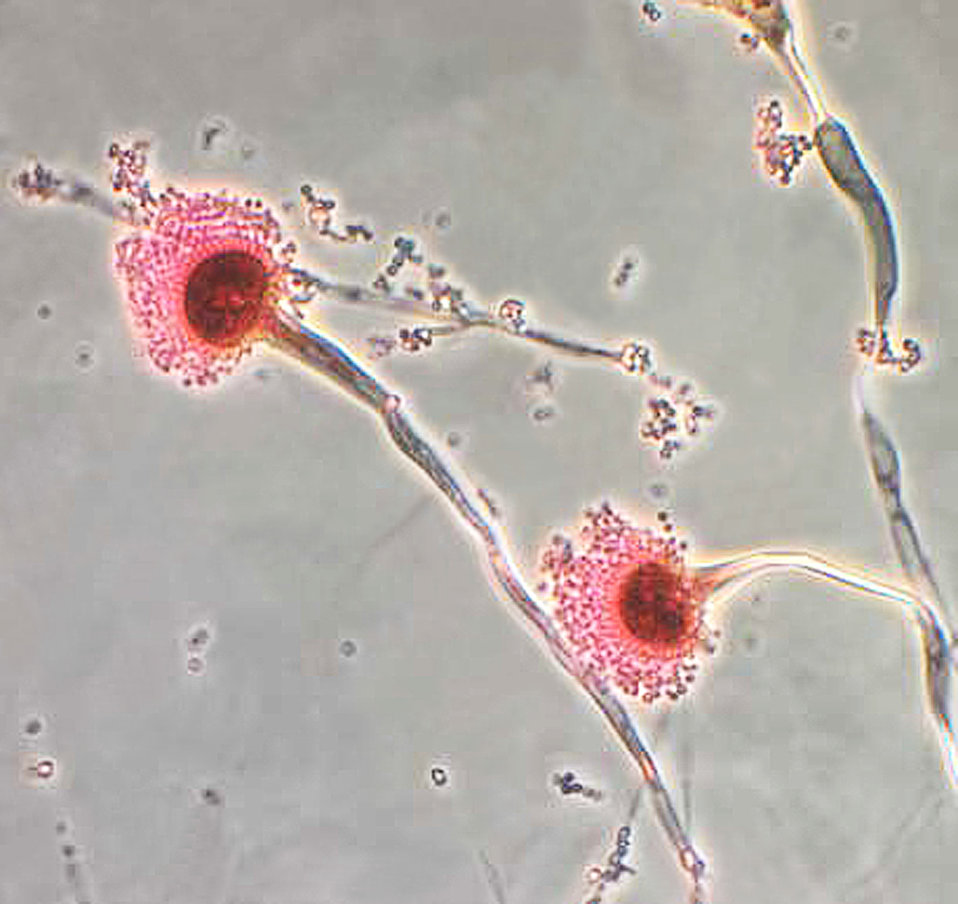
This photomicrograph reveals some of the ultrastructural morphology displayed by the fungal organism Aspergillus fumigatus. Of particular importance is the filamentous conidiophore, which ends in a bulbous, spheroid-shaped vesicle. Atop the distal two-thirds of this vesicle, a uniseriate, i.e., single row, of phialides sprout, each of which anchors its respective chain of spherical conidiospores, which are the asexual reproductive structures of this organism.